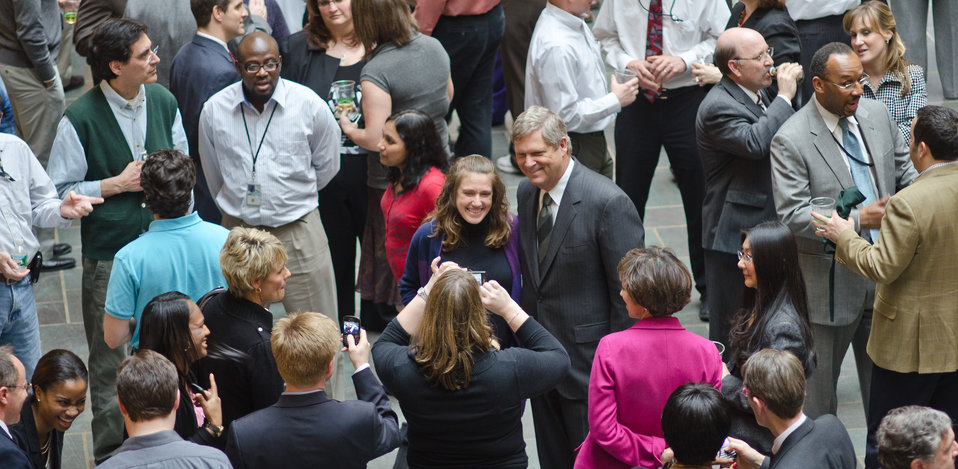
U.S. Department of Agriculture (USDA) Secretary Tom Vilsack (center) and his wife Christie hosted a get together of colleagues for conversation and a break from the day-to-day, in Washington, D.C. on Friday, March 25, 2011. Secretary Vilsack sponsored the pop and pretzel event “to help recognize the great work we are doing together for the American people,” said Vilsack in his invitation. The event enjoyed standing room only, attendance. Many took the opportunity to have a photograph taken with him.